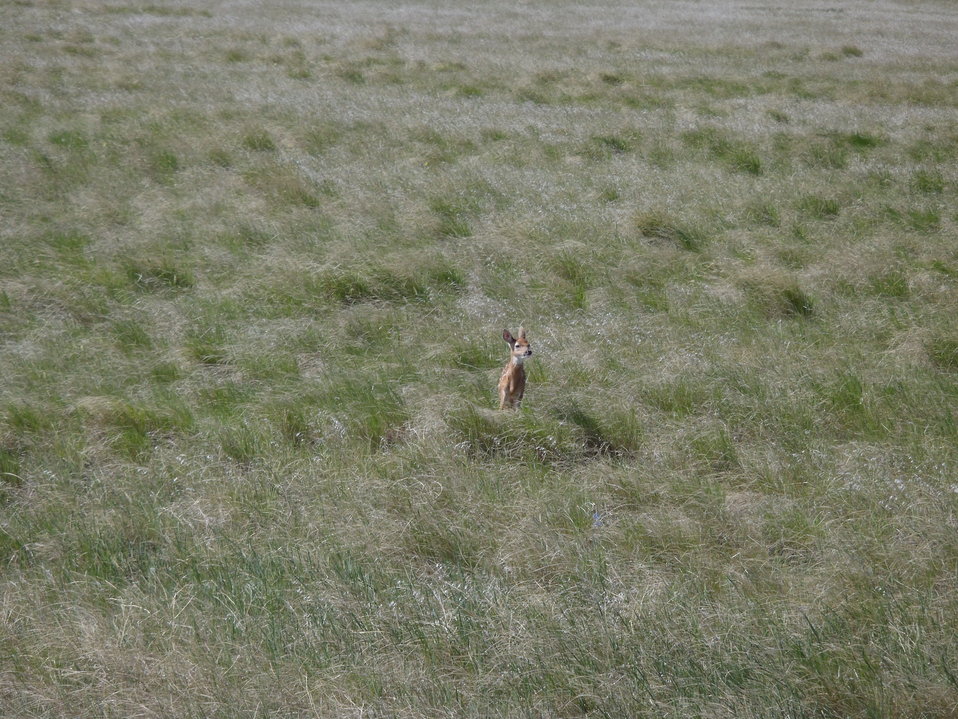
White-tailed Deer Fawn (Odocoileus virginianus)

A White-tailed Deer fawn looking for its mother in the prairie grass.